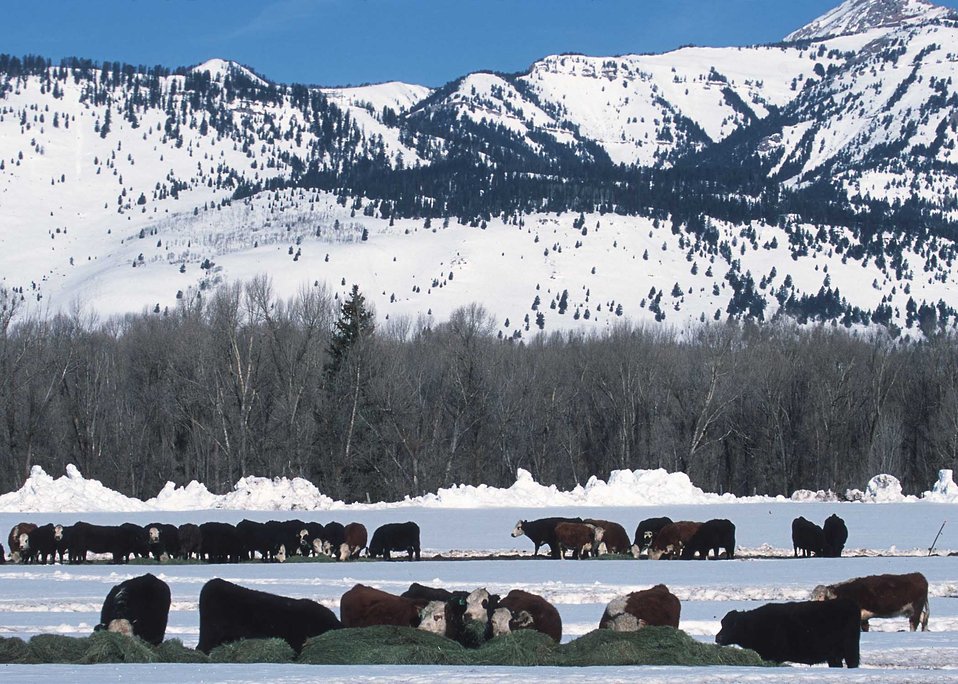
Feeding hay to cattle in deep snow conditions. Jackson, Wyoming.